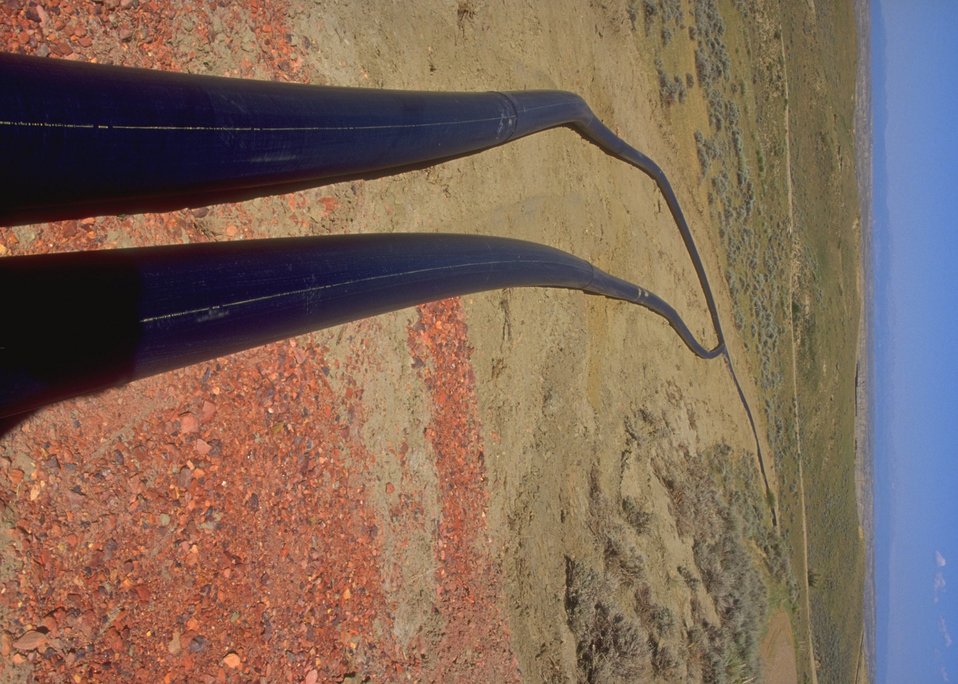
Construction for coal bed methane development, Buffalo Field Office.